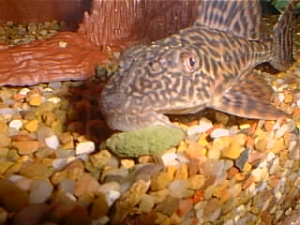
A Plecostomus, feeding.